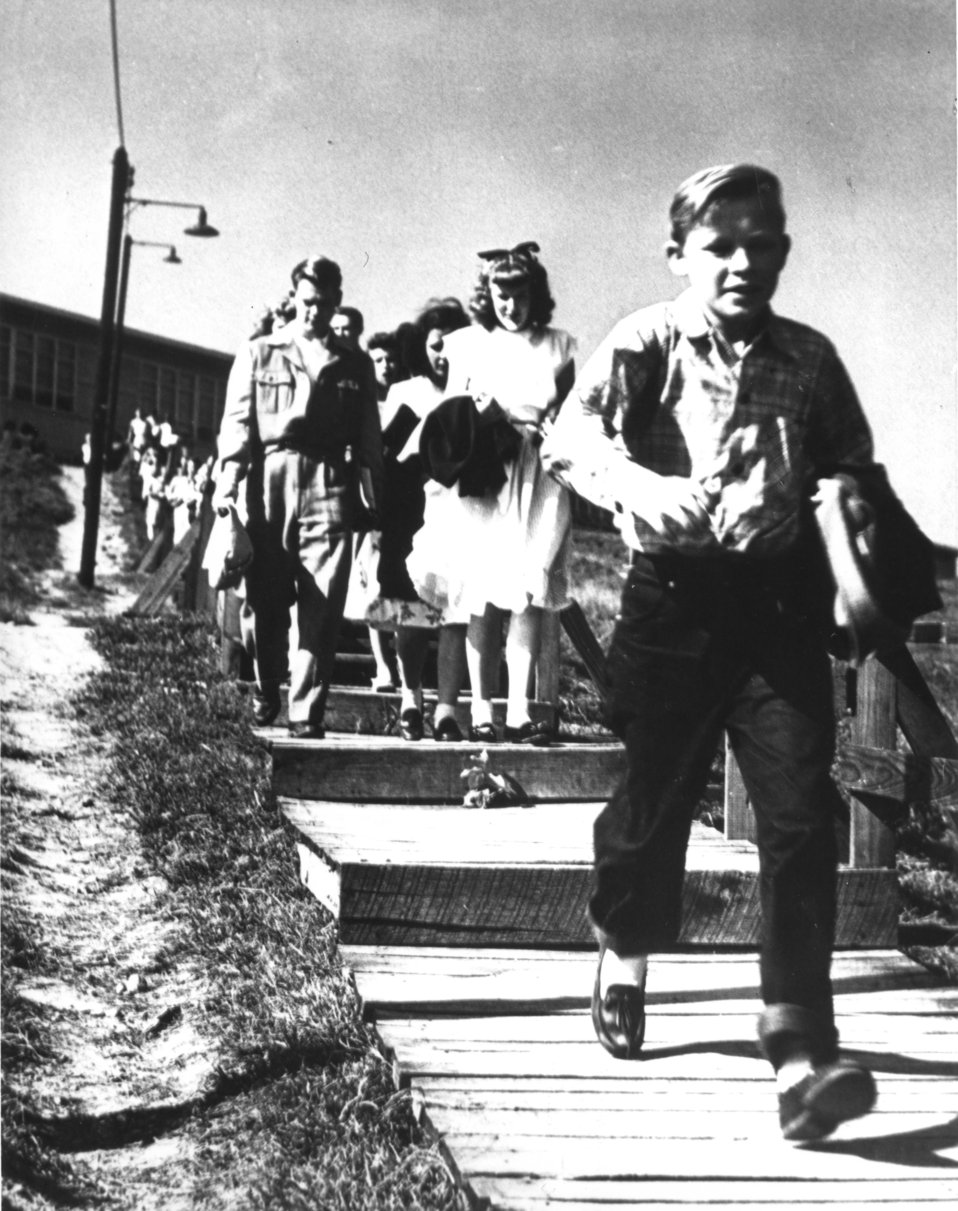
Schools at Oak Ridge